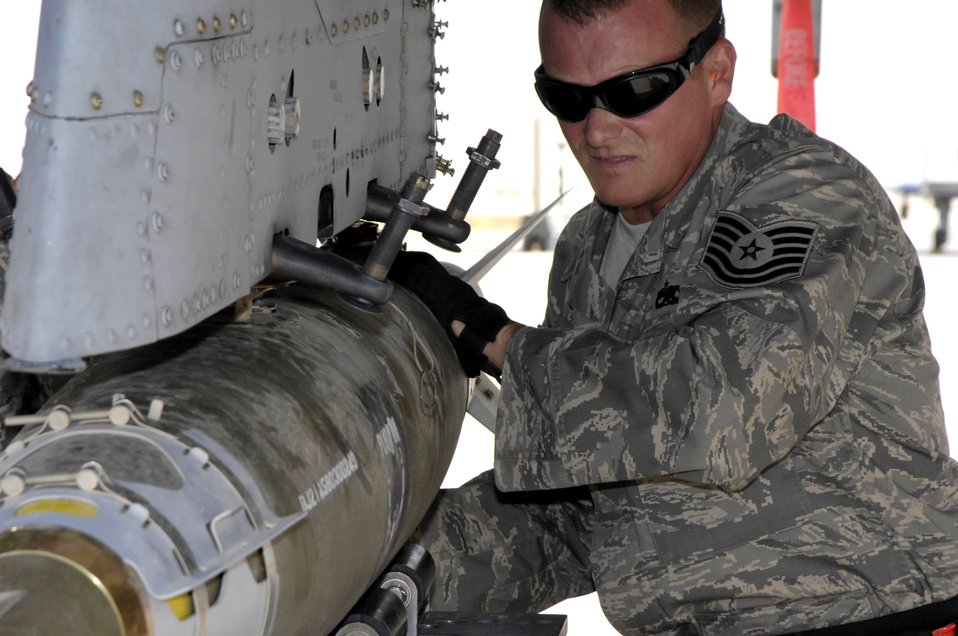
Saving this one for another day

Tech. Sgt David Rey unloads a bomb from an A-10 Thunderbolt II Oct 27 at Al Asad Air Base, Iraq. Sergeant Rey is a weapons handler deployed to Southwest Asia from the Maryland Air National Guard's 175th Wing.